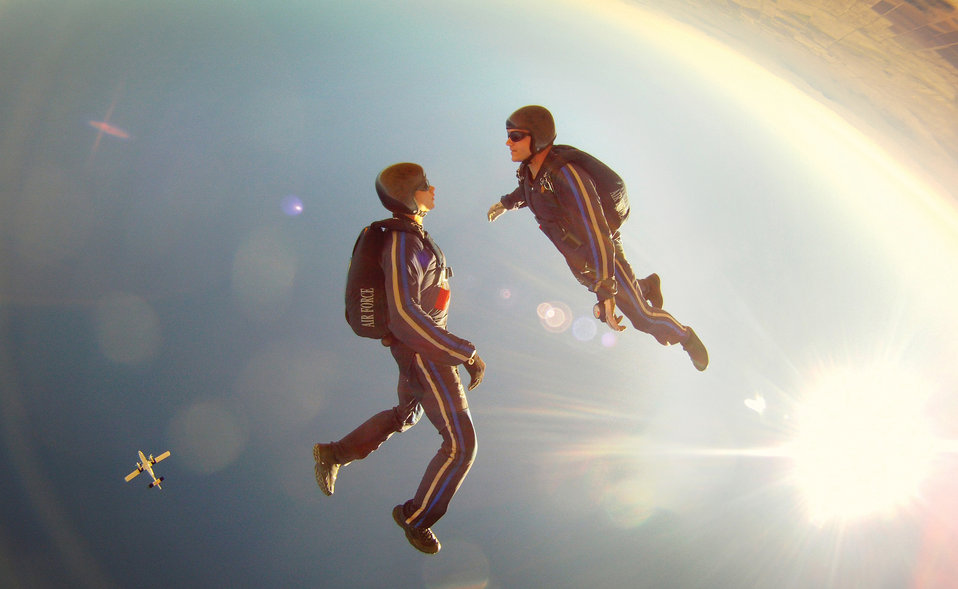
Free falling

U.S. Air Force Academy cadets with the Air Force Wings of Blue Parachute Competition Team perform at the U.S. Parachuting Association's national championships Nov. 3, 2011, in Eloy, Ariz. The